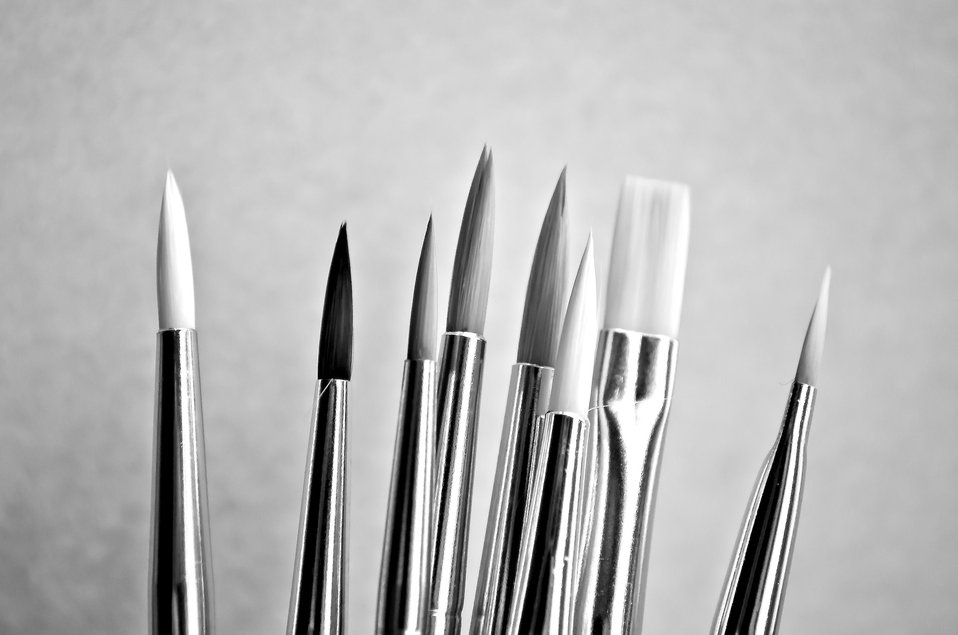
Painting brush - black and white.